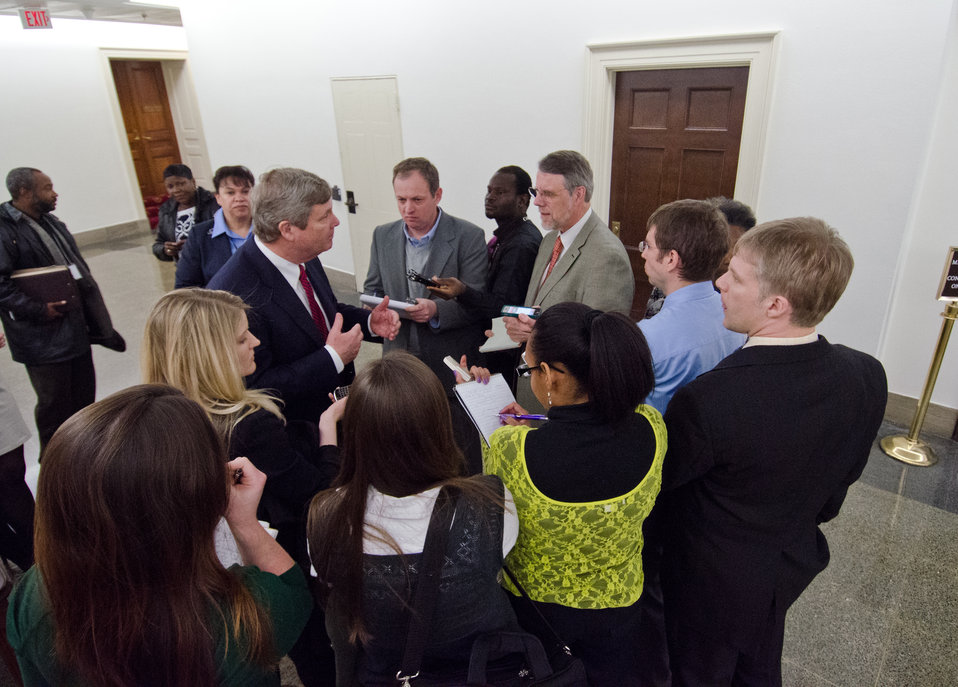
Agriculture Secretary Tom Vilsack takes questions from the news media after he testified before the House Agriculture Committee regarding the “State of the Rural Economy“ at the Longworth House Office Building in Washington, D.C. on Tuesday, Mar. 5, 2013.